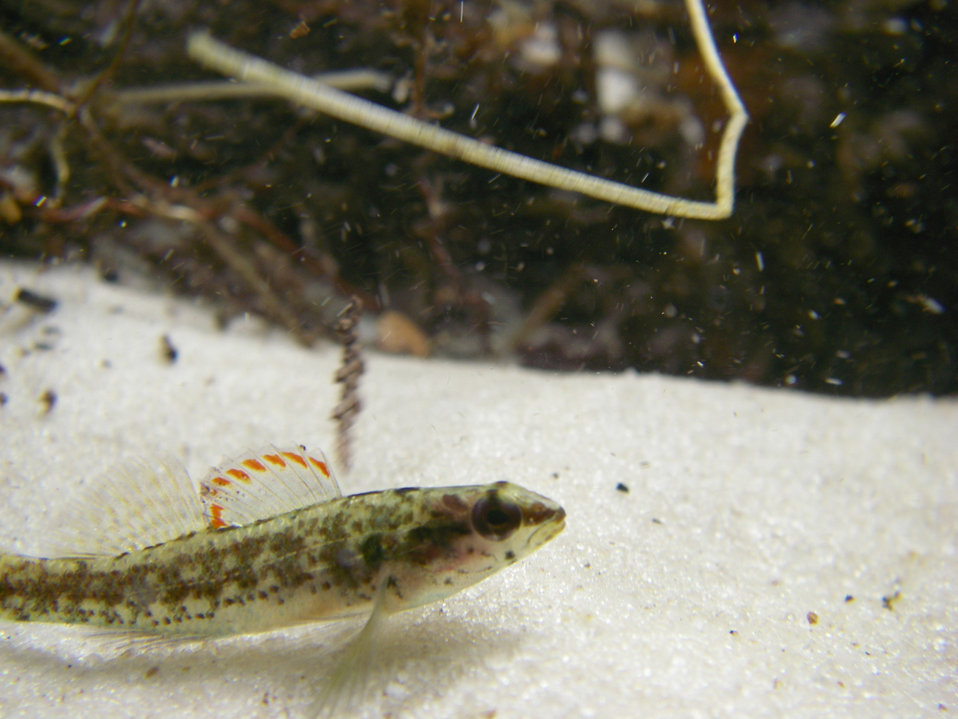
Air Force conservation programs

More than 95 percent of the habitat for the endangered Okaloosa darter resides at Eglin Air Force Base, Fla. Efforts on the installation have led to a proposal to down-list the species from endangered to threatened status.